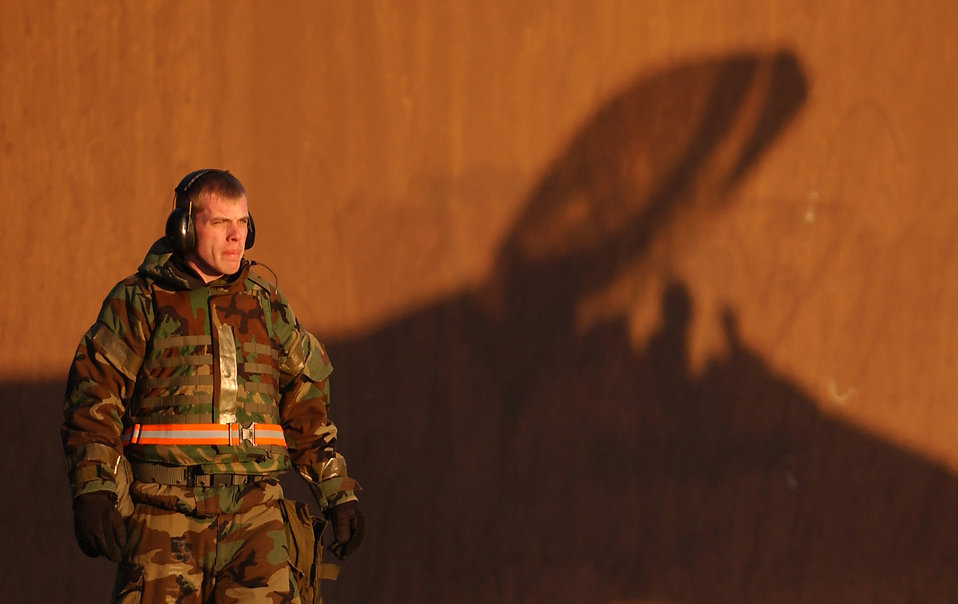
Beverly Bulldog 06-01

OSAN AIR BASE, South Korea -- Airman 1st Class Jason Overs walks around the tail of an F-16 Fighting Falcon during exercise Beverly Bulldog 06-01 here Jan. 24. The scenarios test the ability of the base to protect itself from enemy forces.